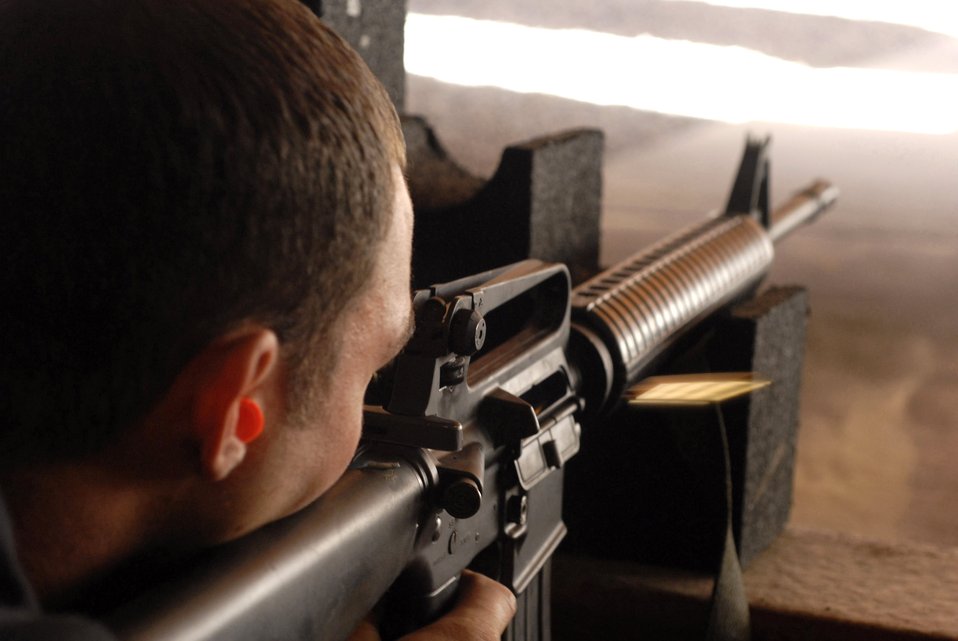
The line is ready, FIRE!

Senior Airman Duane Gross fires his M-16 during a tactical rifle qualification course April 12 at Luke Air Force Base, Ariz. Airman Gross is assigned to the 756th Aircraft Maintenance Squadron. Airmen must be qualified in their primary weapon prior to deploying in support of the war on terrorism. There are more than 28,000 Airmen deployed around the world today.